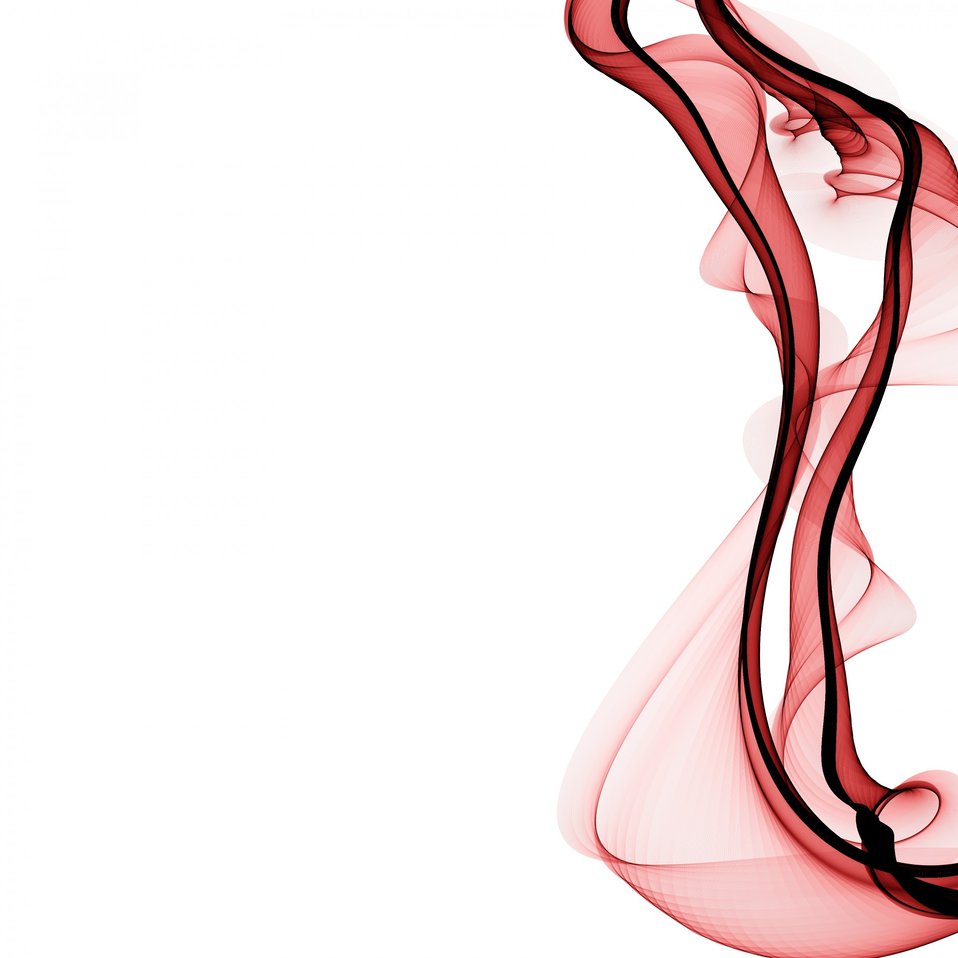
Red ribbon background

Simple smokey red ribbon designed across a white background, with lots of copyspace..